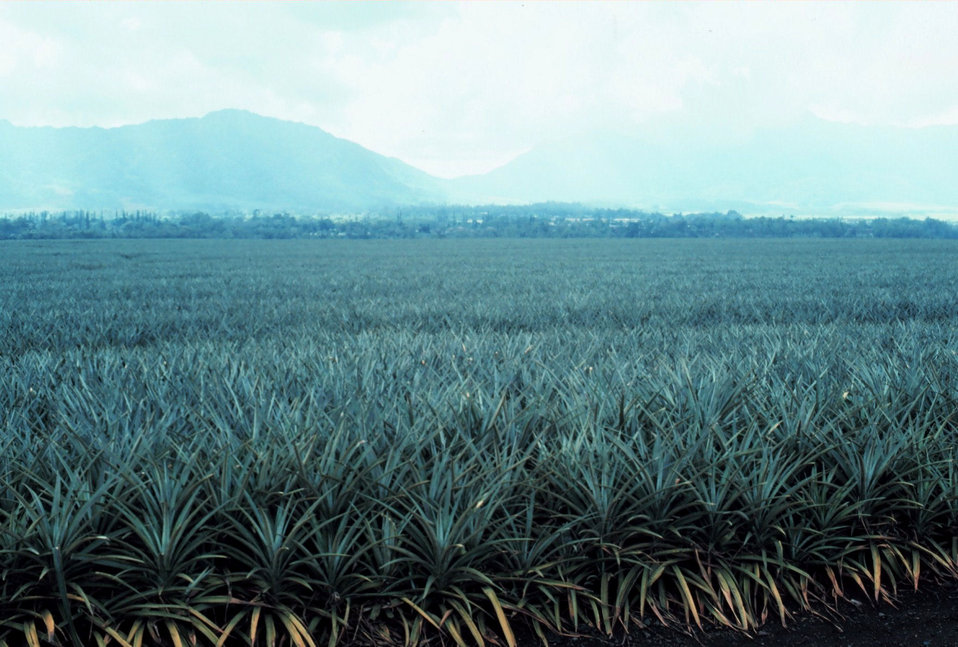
A pineapple plantation